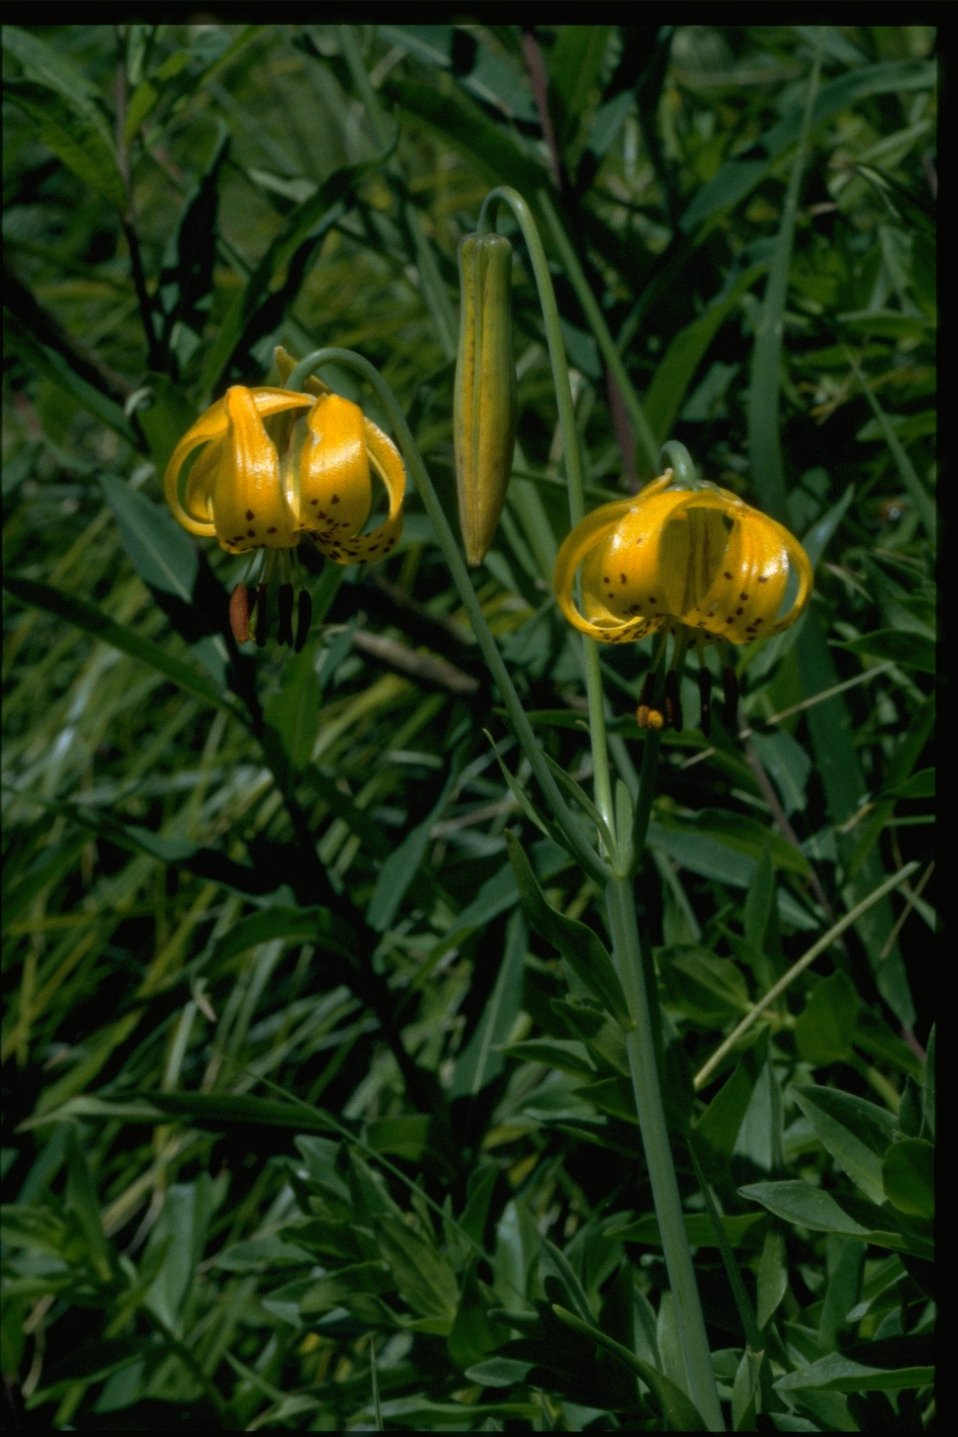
Medium shot of Lilium columbianum.